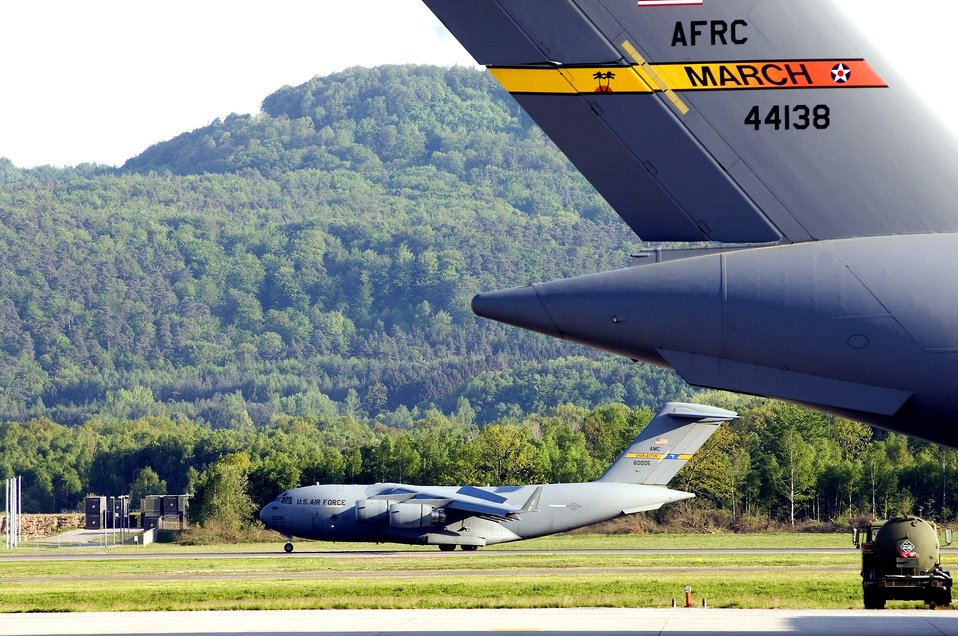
Maintainers keep C-17s flying

A C-17 Globemaster III from the 437th Airlift Wing at Charleston Air Force Base, S.C., lands at Ramstein Air Base, Germany, on May 11, 2006. The C-17 in the foreground is from the Air Force Reserve Command's 452nd Air Mobility Wing at March Air Reserve Base, Calif.